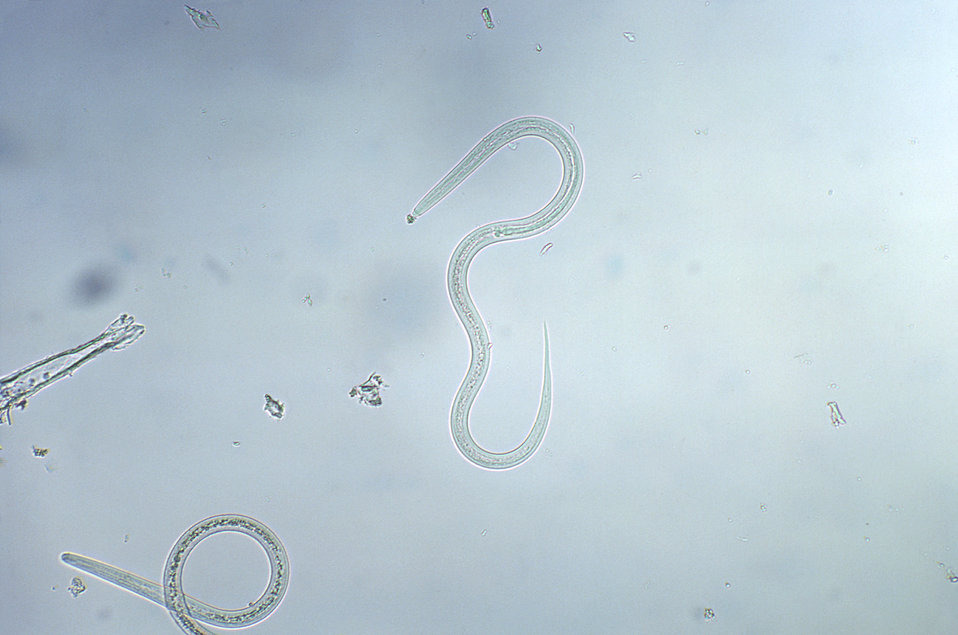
Under a magnification of 128X, this photomicrograph revealed the presence of a number of Strongyloides sp filariform larval-staged organisms. Infective, third-stage filariform larvae (L3) of Strongyloides stercoralis are up to 600�m long. The tail is notched (see PHIL 1509, under higher magnification), and the esophagus to intestine ratio is 1:1. Infective L3 larvae are found in soil and invade the human host by direct penetration of the skin. They may be found in respiratory specimens during cases of autoinfection.